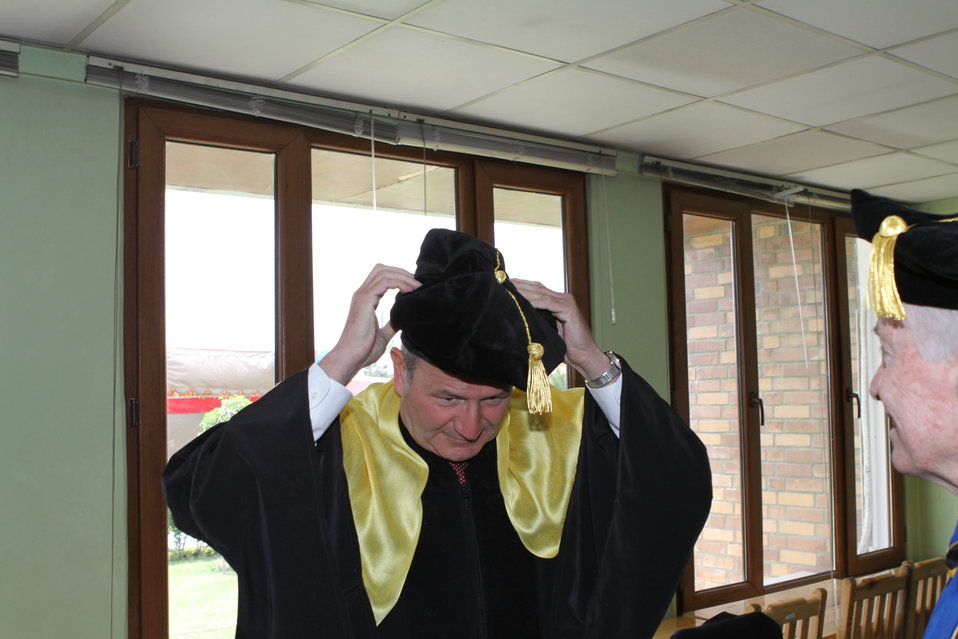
100526 AUAF Graduation 051